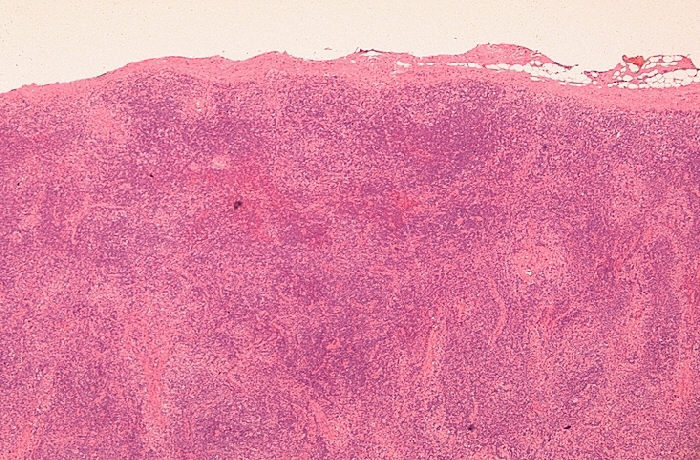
Histopathology of lymphadenopathy due to infection by HIV-1.